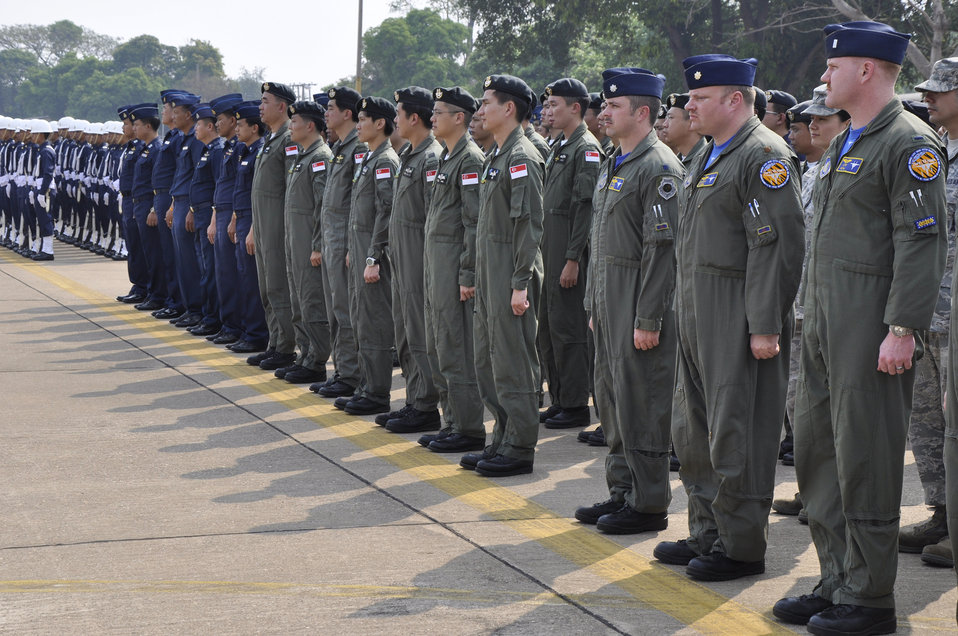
Pacific partners close Cope Tiger with ceremony

U.S., Singaporean and Thai military personnel participating in Cope Tiger 2010 await the arrival of the official party on the last day of the exercise March 12, 2010 at Korat Royal Thai Air Force Base, Thailand.